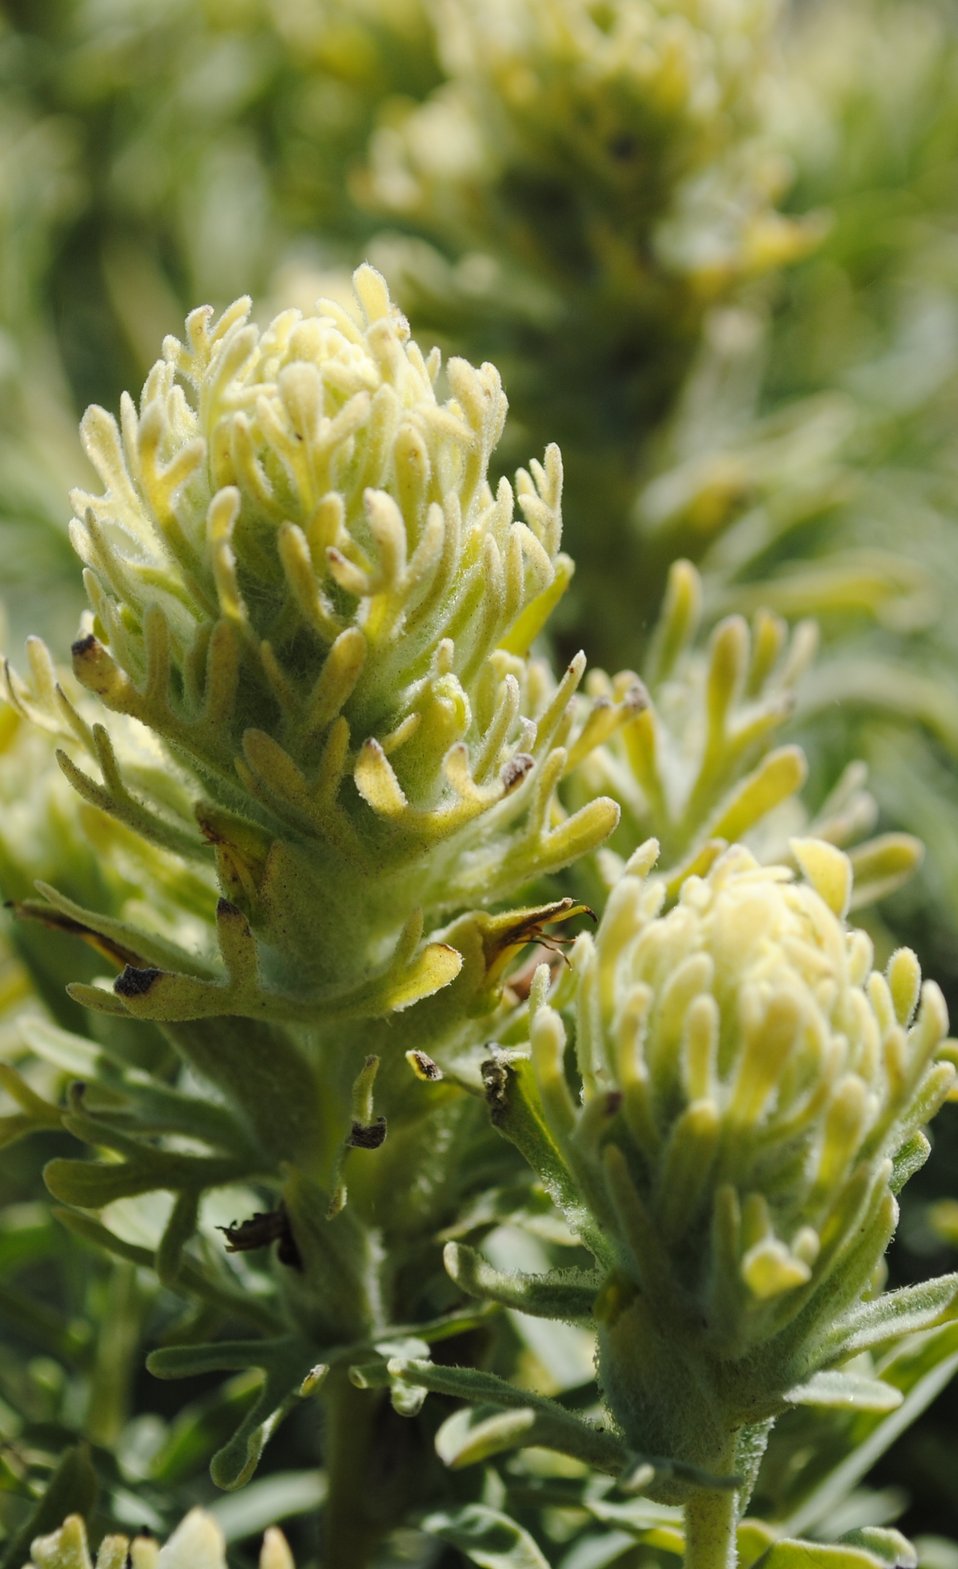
San Clemente Island paintbrush (Castilleja grisea) is endemic to San Clemente Island, the southernmost of eight Channel Islands off the southern California coast. The federally endangered plant is 1.3 to 2 ft. tall and is ash-gray in color with densely hairy leaves that are alternate and linear. The plant can be either free-living or parasitic.